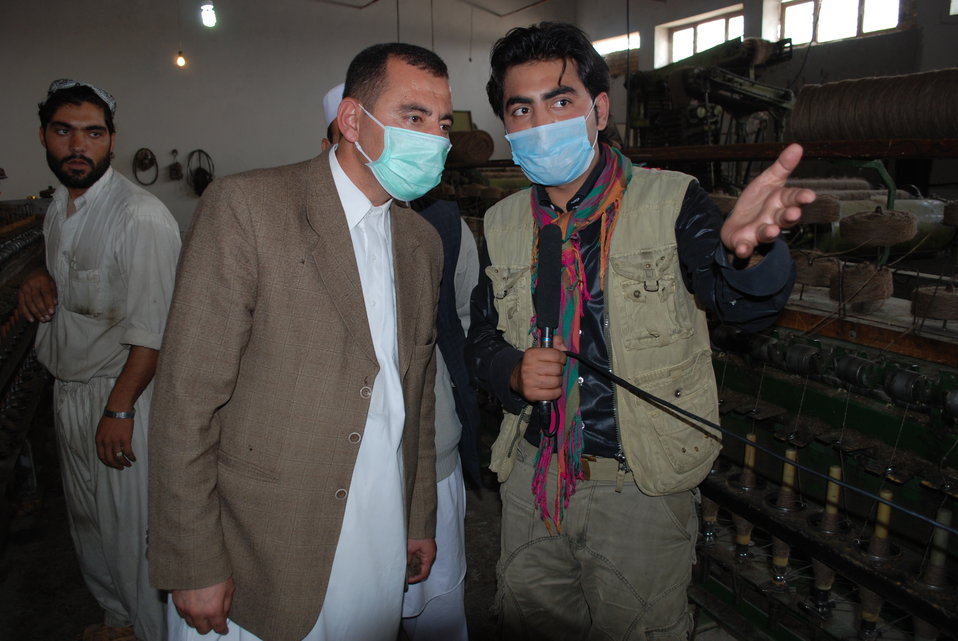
'On the Road' in Balkh Province